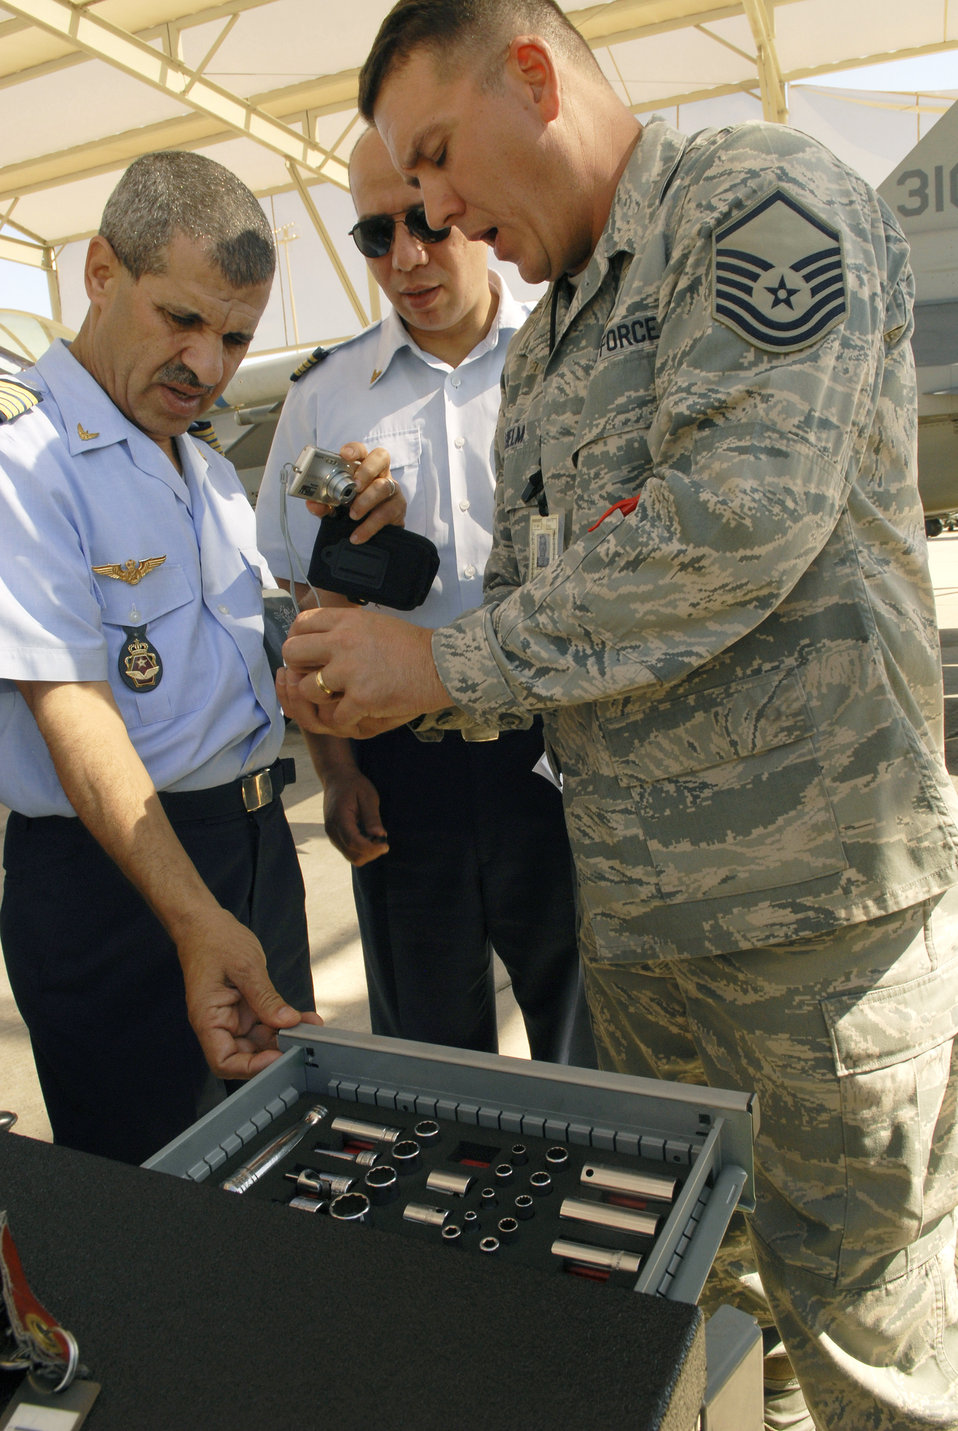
Luke Airmen advise Moroccan air force on F-16 operations

Master Sgt. Michael Helm describes features of a composite tool kit to members of the Royal Moroccan air force March 12 at Luke Air Force Base, Ariz. Members of the RMAF visited Luke AFB to learn about Air Force maintenance procedures. Sergeant Helm is assigned to the 310th Aircraft Maintenance Unit.